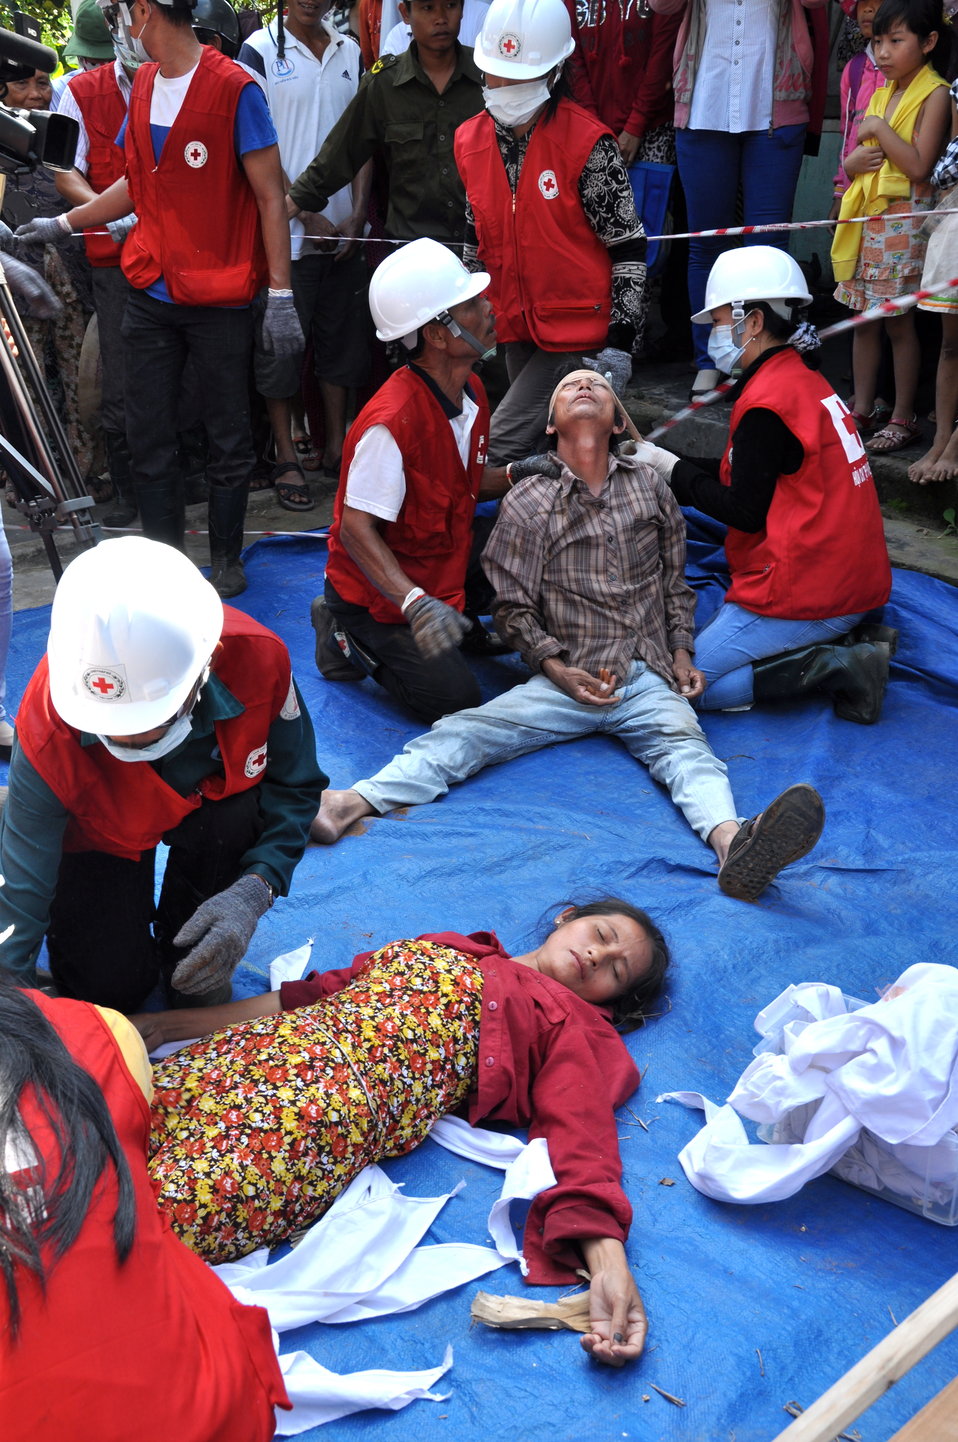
USAID, Red Cross Support Disaster Response Drill in Duy Hoa Commune, Quang Nam Province

Duy Hoa Commune, Quang Nam Province
December 5, 2012